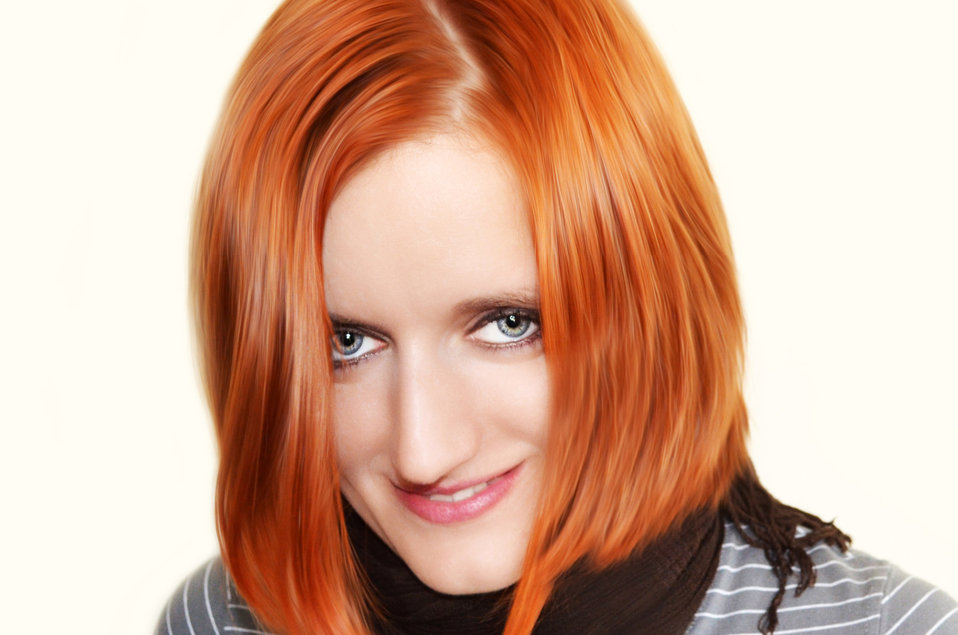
Woman with red hair.